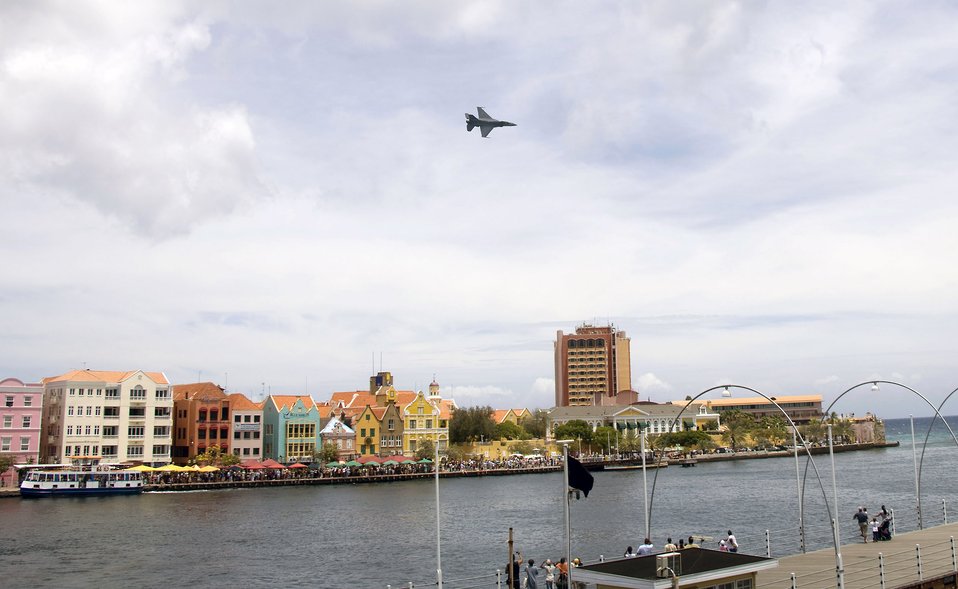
Dutch Navy Days

An F-16 Fighting Falcon, flown by Capt. George Clifford of the Viper East F-16 demonstration team, flies over Curacao, Netherlands Antilles. The Viper East team, from Shaw Air Force Base, S.C., joined officials from Air Forces Southern headquarters at Davis-Monthan AFB, Ariz., to augment